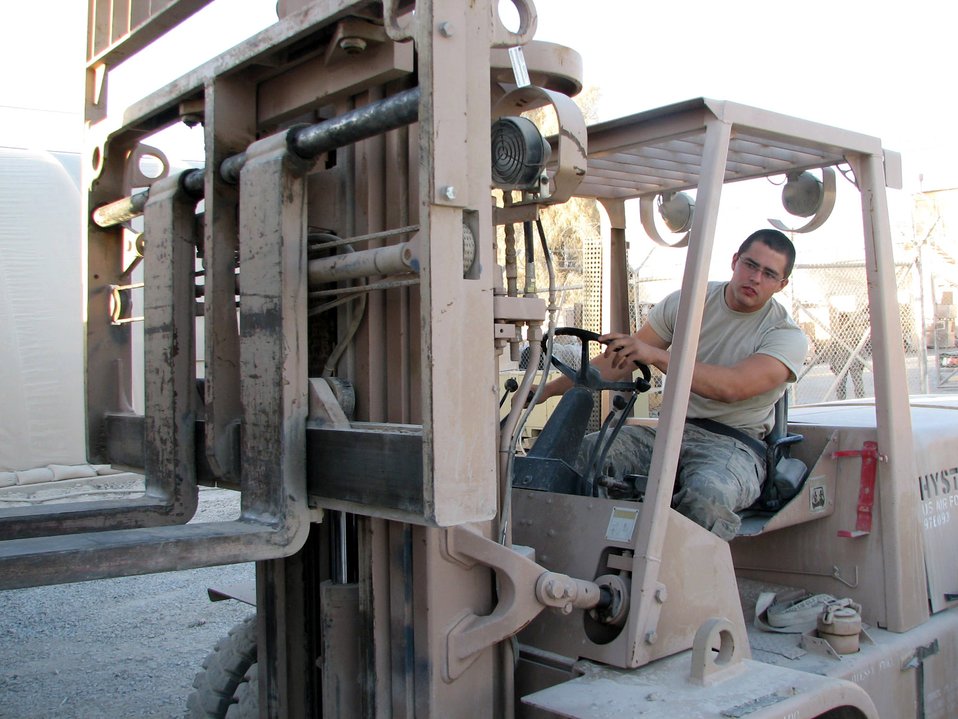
Keeping it moving in Kandahar

Airman 1st Class Beau Woodruff prepares to pick up cargo at Kandahar Airfield, Afghanistan, Oct. 12. Airman Woodruff is a member of the 455th Air Expeditionary Wing, whose mission is to provide close-air support, mobility, intelligence, surveillance and reconnaissance in support of the war on terrorism. Airman Woodruff is from Lorena, Texas.